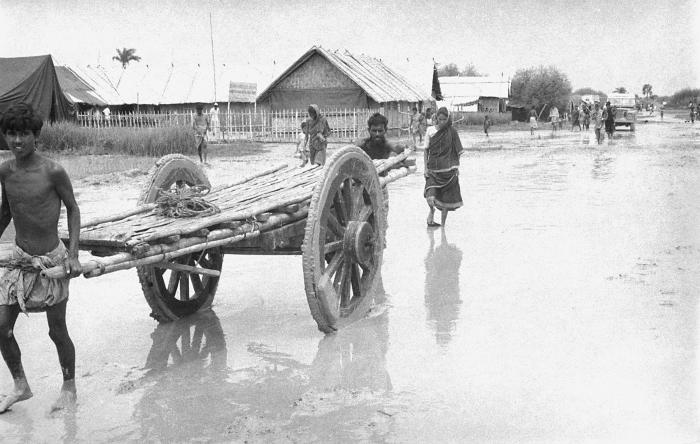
These two Bangladesh men were pushing a cart used to haul goods, simultaneously pushing and pulling it through a village's muddy roads. Note the smallpox jeep in the distant background. This image was part of a series provided by Dr. Stan Foster, and captured by Pierre Claquin, M.D., B.A.C., who at the time was a member of the World Health Organization's Smallpox Eradication Program. It was part of a series photographed by former E.I.S. officer, Stanley O. Foster M.D., M.P.H., and was one of a series entitled 'The Story of One Smallpox Jeep', which depicted the travails faced by the jeep, and its occupants of public health practitioners, as they road through the Bangladesh countryside in an attempt to eradicate smallpox from the country.